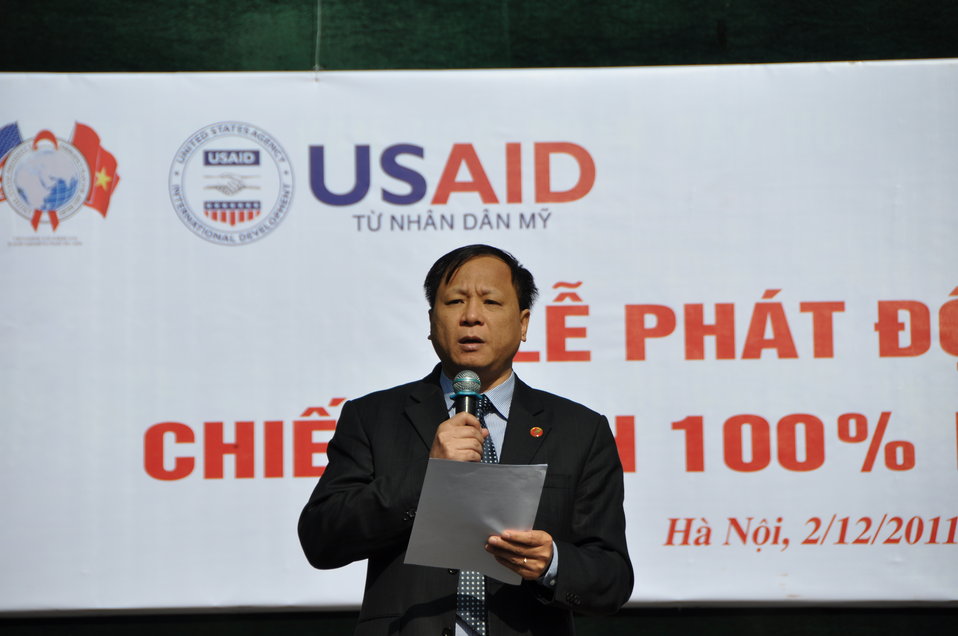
100% Condom Use Campaign Launch, Dec. 2, 2011